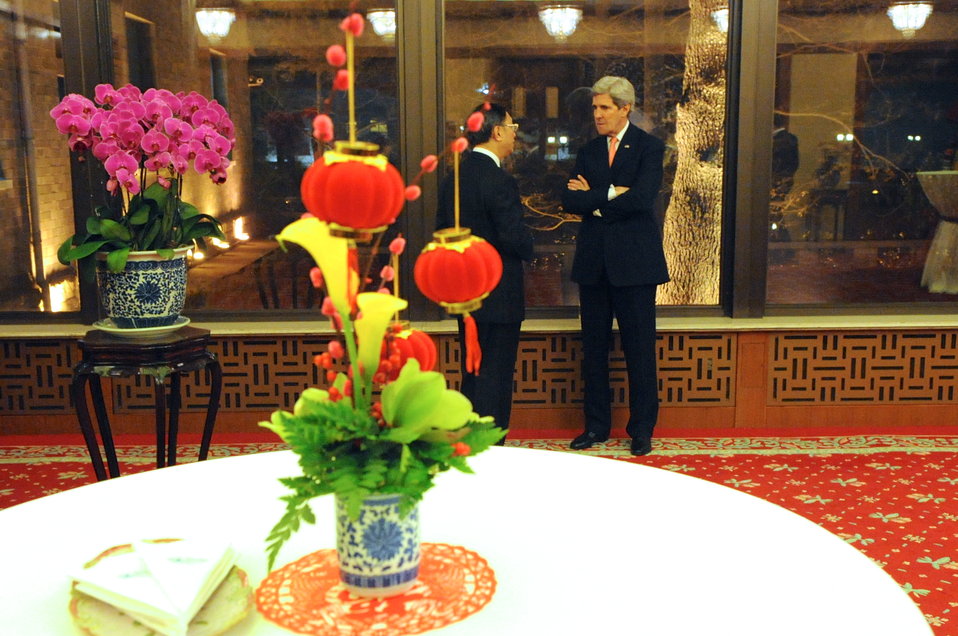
Secretary Kerry Chats With Chinese State Councilor Yang

U.S. Secretary of State John Kerry chats with Chinese State Councilor Yang Jiechi before a dinner at the Diaoyutai State Guest House in Beijing, China on February 14, 2014.